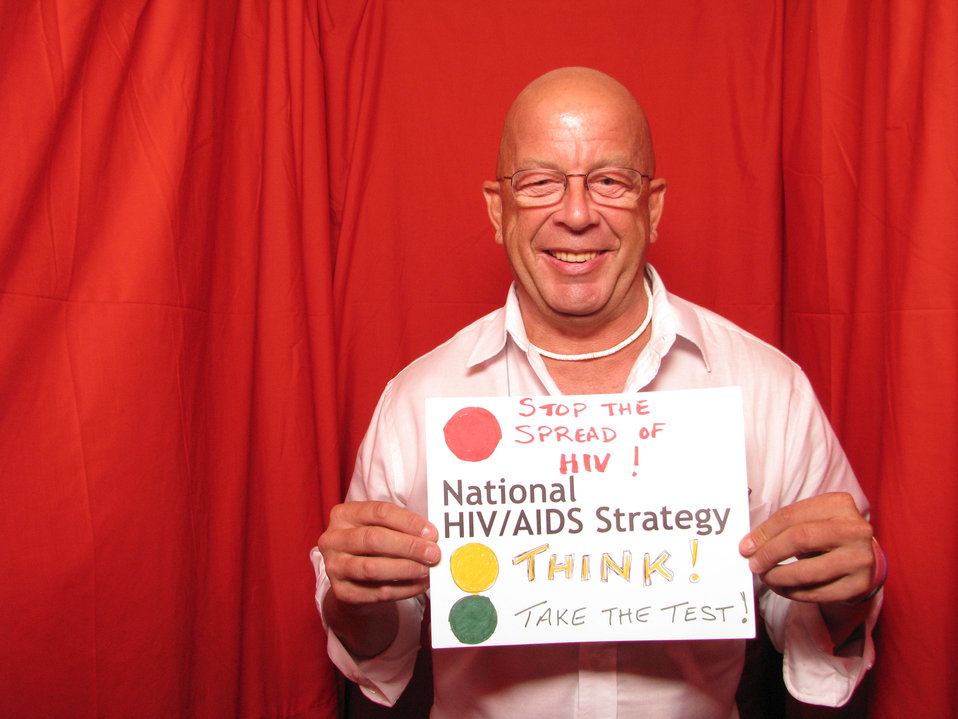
National HIV/AIDS Strategy. STOP the Spread of HIV! THINK! Take the Test!

From the AIDS.gov photo booth at the U.S. Conference on AIDS, September 2010 (Orlando, FL).